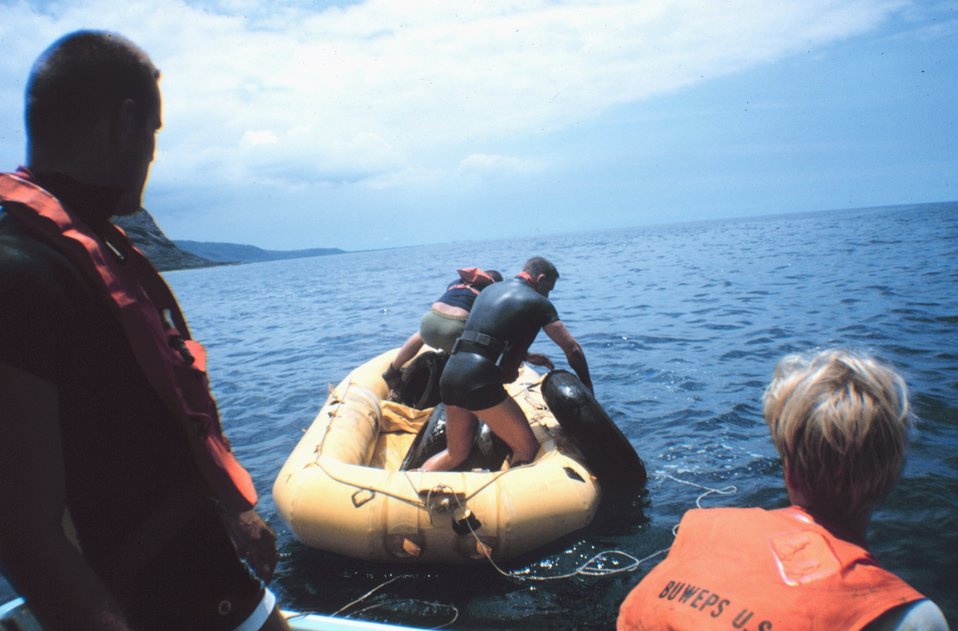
Navy divers assisting in the placement of used tires as an alternate reef material on the artificial reef site at Pokai Bay, Oahu. The tires did not stay in place because of the strong surge of the large Pacific swells at the site.